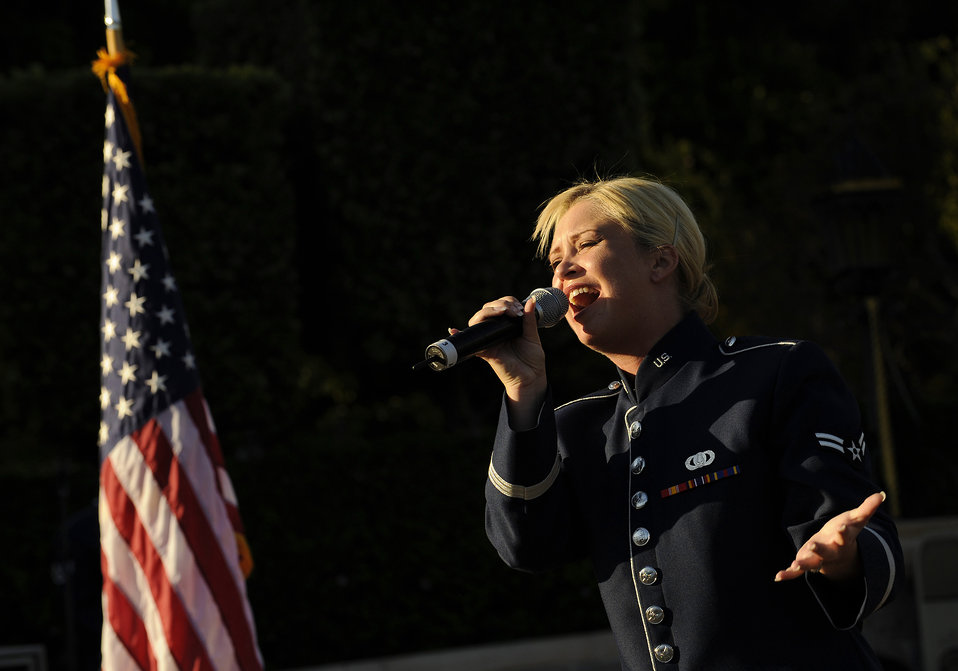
Air Force Week Los Angeles

Airman First Class Pamela Kelley of the U.S. Air Force Band of the Golden West performs for hundreds of spectators in front of Sleeping Beauty's Castle at the Disneyland Resort in Anaheim, Calif., Nov. 17. The band is performing during Air Force Week Los Angeles, an event designed to educate the local population about the Air Force's capabilities and missions through various activities and exhibitions in the Los Angeles area.